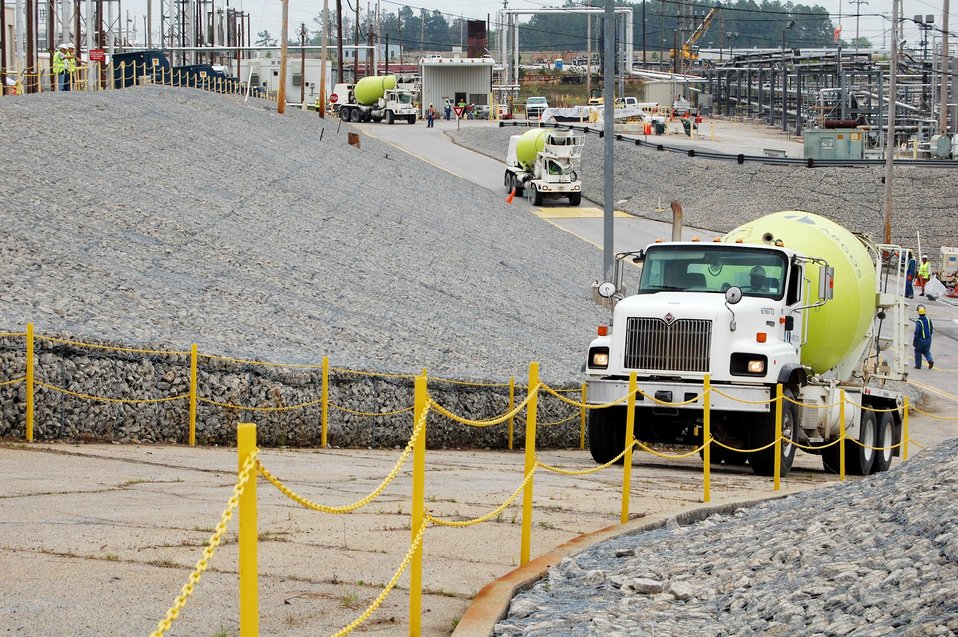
Workers Pour 1 Million Gallons of Grout into Massive Tanks

Cement trucks transport a specially formulated grout that is pumped into waste tanks.

Workers have poured more than 1 million gallons of a cement-like grout into two underground radioactive waste tanks, moving the Savannah River Site (SRS) nearer to closing the massive structures.